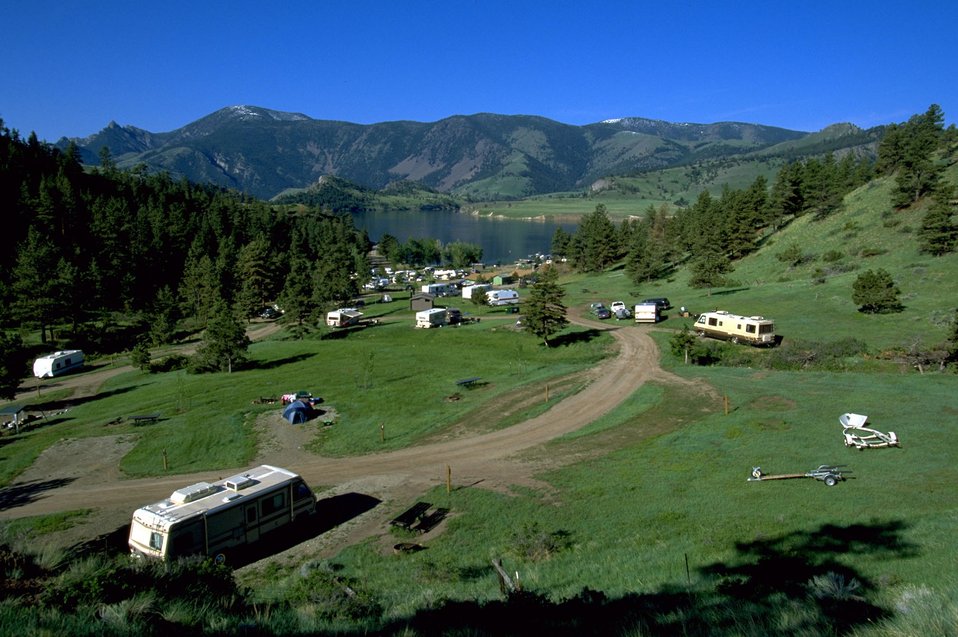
A hillside view of Log Gulch Campground